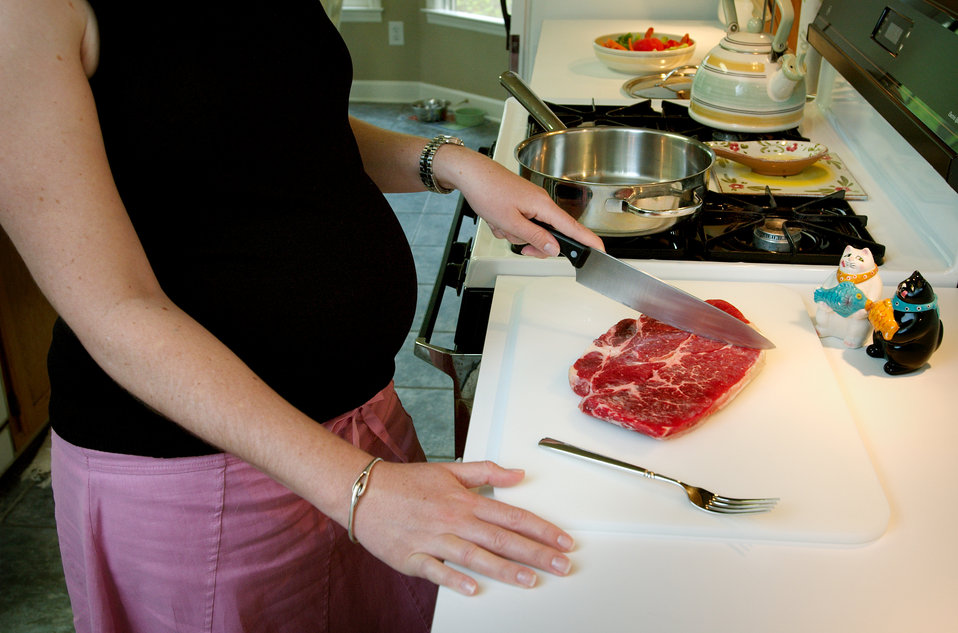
This photograph showed a pregnant woman using a kitchen knife to cut raw meat before cooking. Pregnant women or immunosuppressed patients can be at greater risk in acquiring foodborne illness, and need to take additional precaustions when handling raw food products.Cook meat, poultry and eggs thoroughly. Using a thermometer to measure the internal temperature of meat is a good way to be sure that it is cooked sufficiently to kill bacteria. For example, ground beef should be cooked to an internal temperature of 160o F. Eggs should be cooked until the yolk is firm.